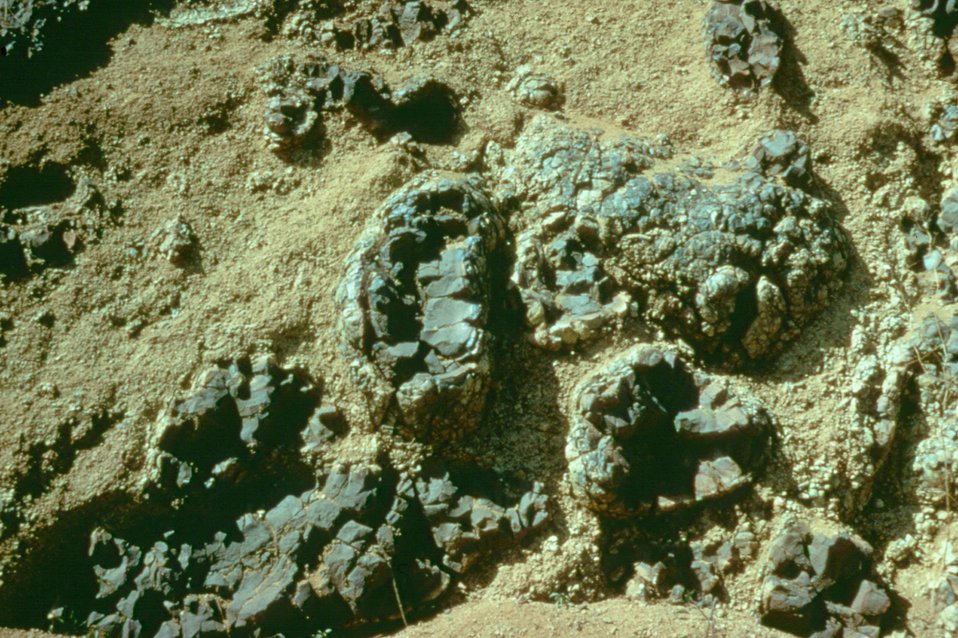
Pillow lava Four Rivers LSRD Lower Snake River District